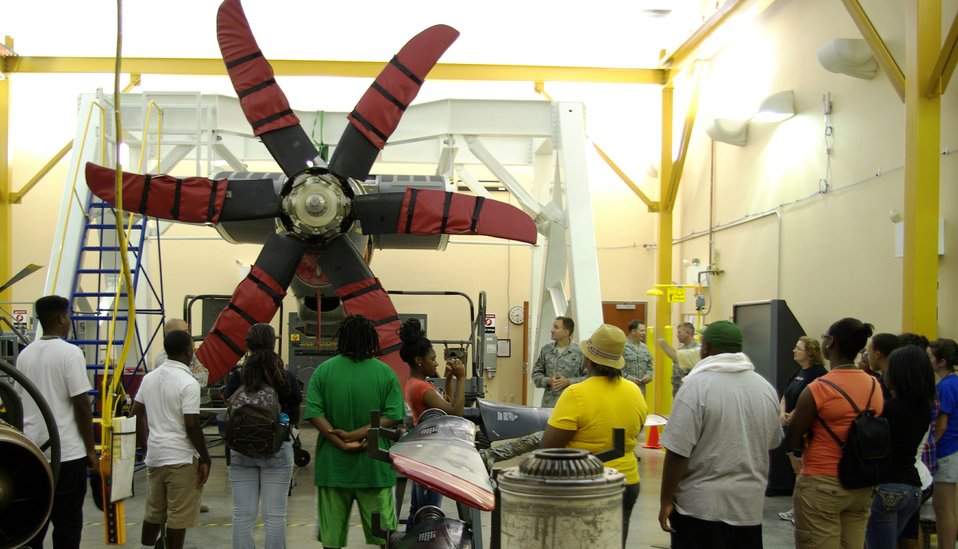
U.S. Department of Agriculture’s (USDA) Animal and Plant Health Inspection Service (APHIS) Wildlife Services biologist Kimm Hunt and military personnel lead a tour of the Little Rock Air Force Base, AR to learn about methods and the importance of reducing wildlife strikes to aviation for students in the APHIS Ag-Discovery Program through the University of Arkansas at Pine Bluffs, AR on June 27, 2012.